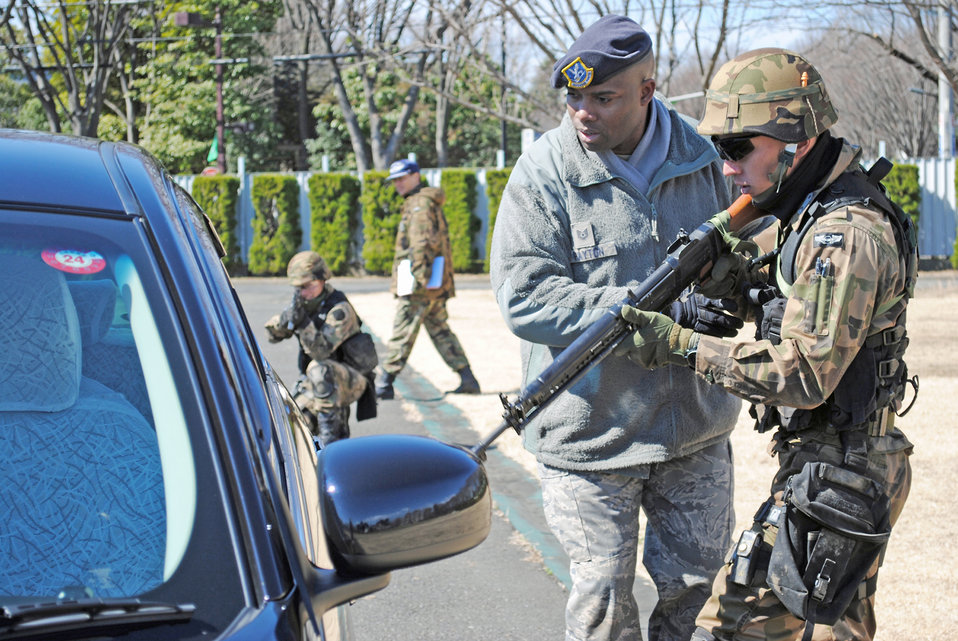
Airmen help prepare Japanese counterparts for new security role

Tech. Sgt. Johnnie Payton trains a security guard from the Japan Air Self Defense Force on how to properly approach a suspicious vehicle during field training March 4, 2011, at Yokota Air Base, Japan. Airmen from 5th Air Force and 374th Airlift Wing are helping to train approximately 35 JASDF security guards as they prepare to stand up the Air Self Defense Force's first squadron devoted to advanced security training. Sergeant Payton is the 374th Security Forces Squadron flight chief.